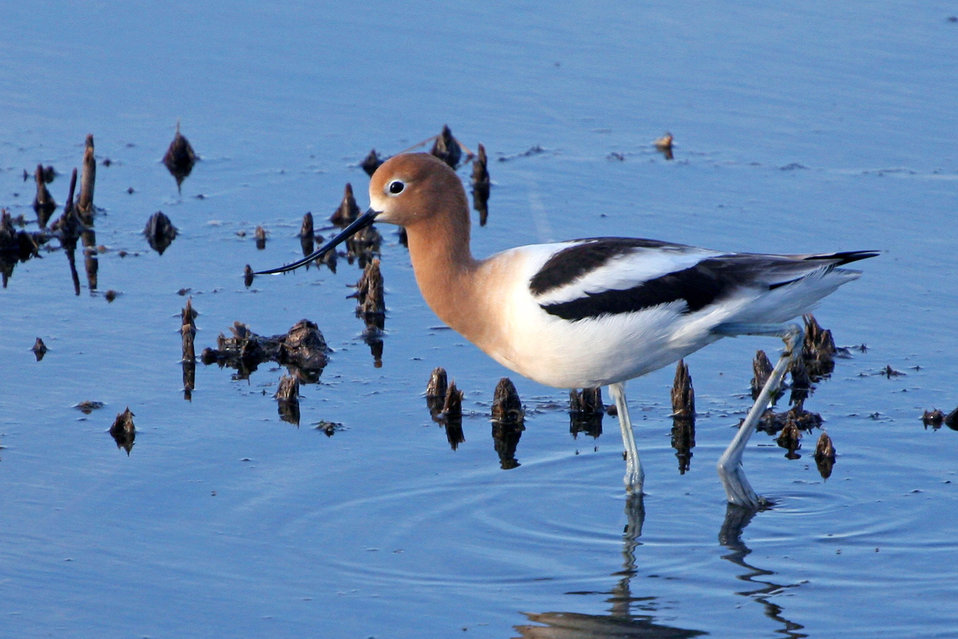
American Avocet

The american avocet is a large shorebird with a long, upturned bill. It prefers to nest on dry, rocky ground. When searching for food, it walks through shallow water and sweeps its bill back and forth. This movement in the water causes insects to surface.